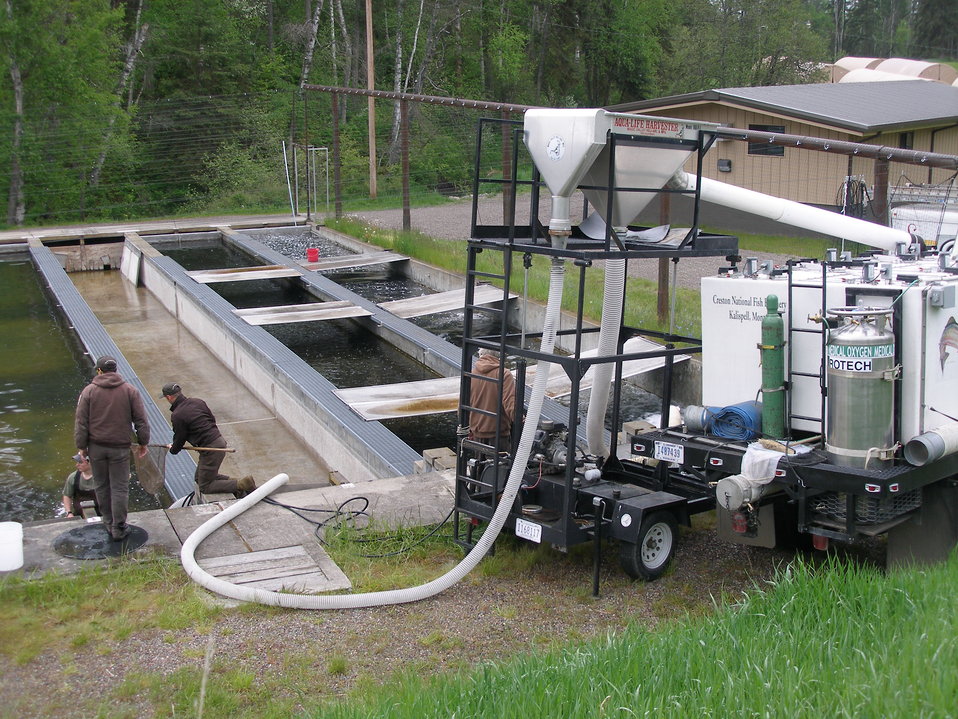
Loading Fish for Stocking

Creston National Fish Hatchery staff use a fish pump to load rainbow trout into the distribution truck in June 2011. Approximately 5,000 fish were taken to Blackfoot Reservation in Montana.